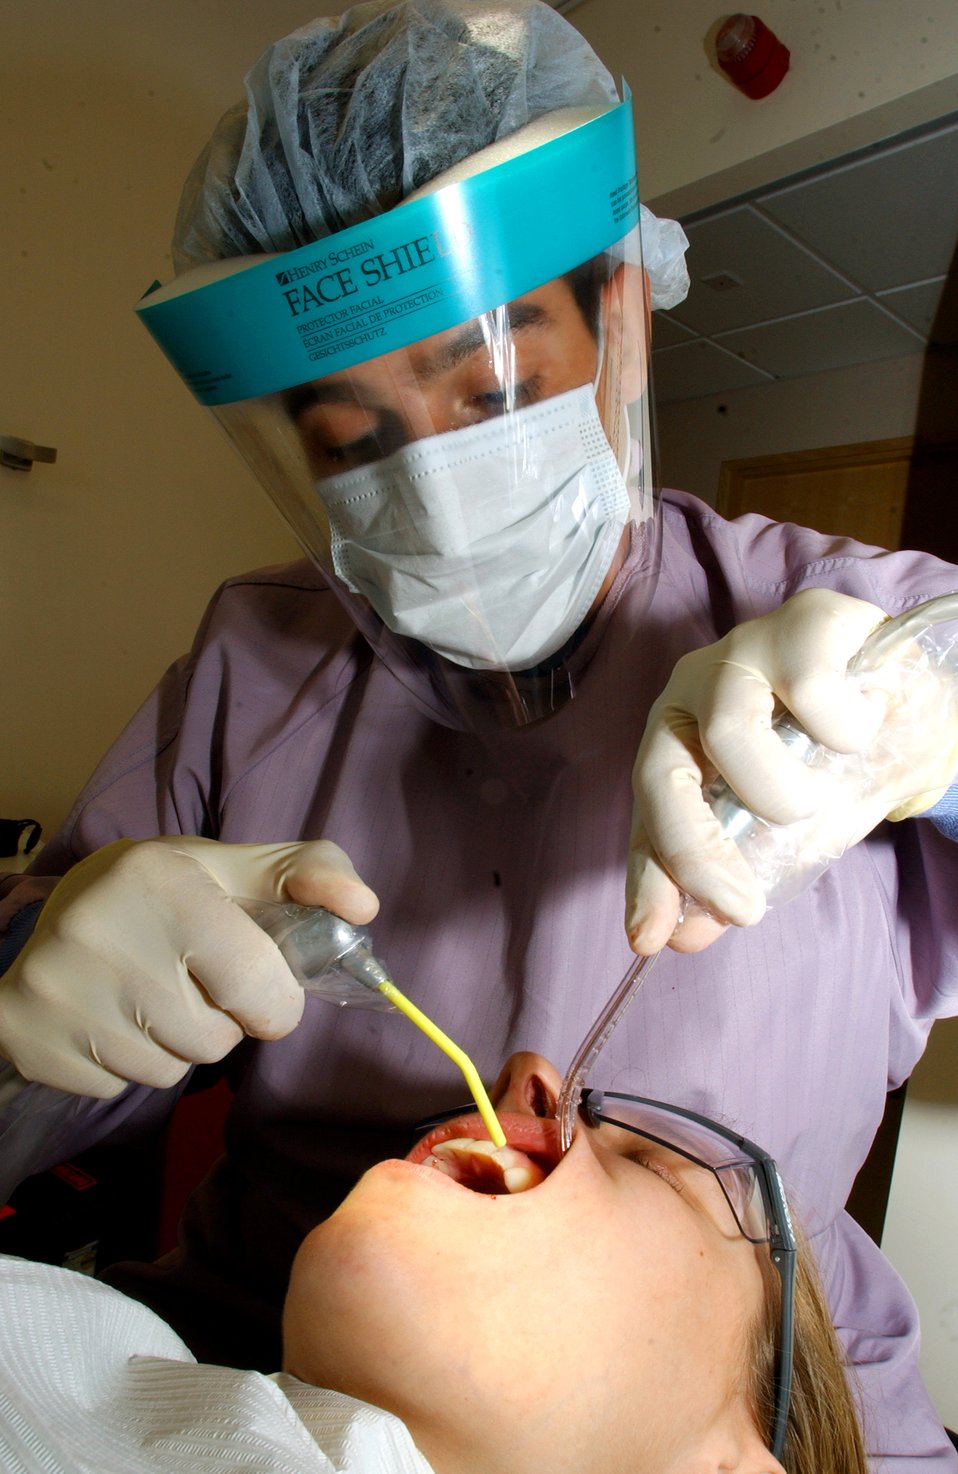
Dental details

Tech. Sgt. Dennis Leon conducts a periodic oral exam on Senior Airman Lauryn Hashem at Royal Air Force Lakenheath, England, on July 31. The exam includes a cleaning, scaling, polishing, flossing, fluoride treatment and instruction on proper oral hygiene. Sergeant Leon is the the NCO in charge of preventive dentistry for the 48th Dental Squadron. Airman Hashem is an aircrew life support journeyman for the 492nd Fighter Wing.